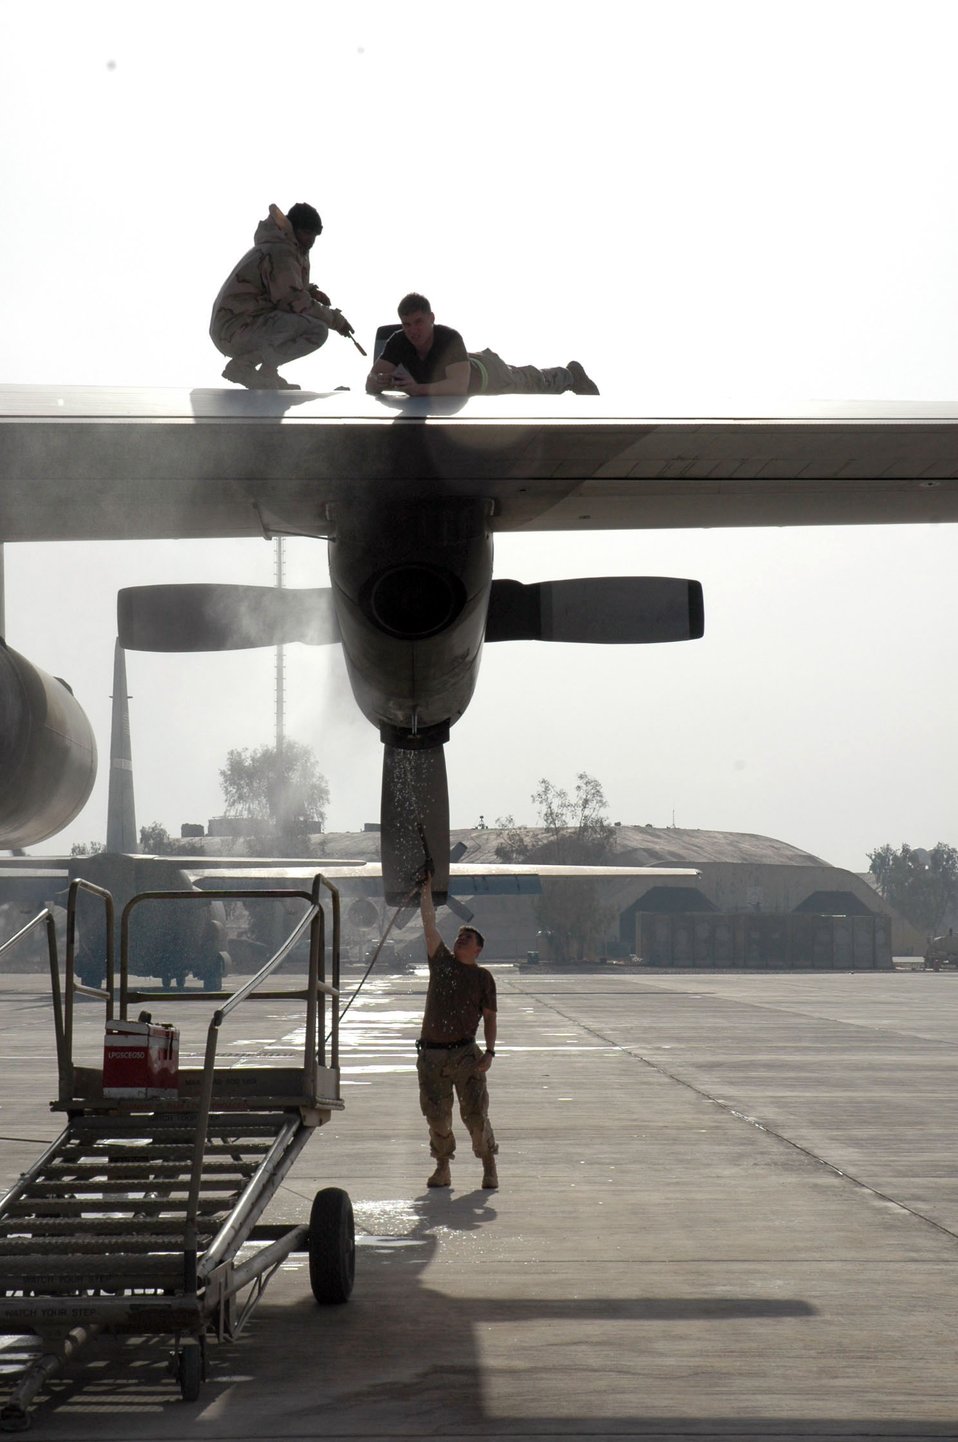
Little Rock Airlift

BALAD AIR BASE, Iraq (AFPN) -- 777th Airlift Expeditionary Squadron Airmen conduct maintenance on a C-130 Hercules stationed here. They are deployed from Little Rock Air Force Base, Ark.